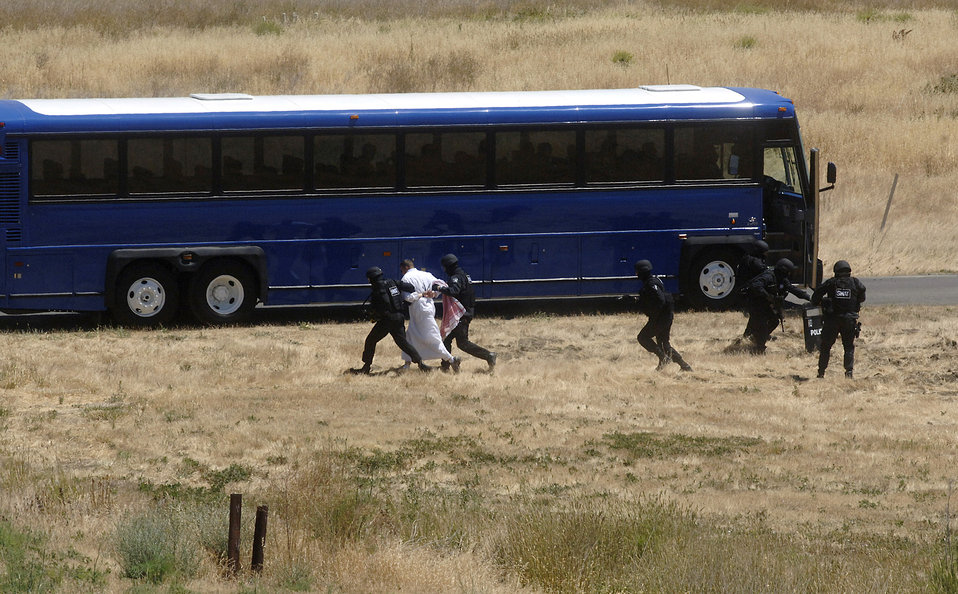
Civic leaders tour Travis during Air Force week

SWAT members capture a